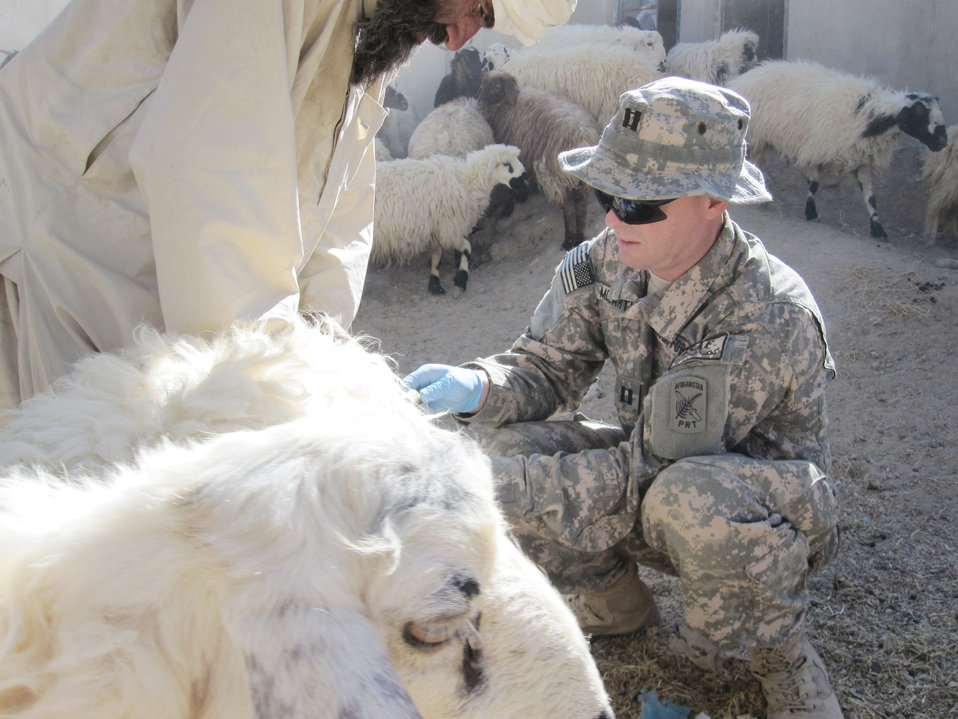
Servicemembers help Afghans

Sheep are immunized by Capt. Michael McCarter Feb. 28, 2010 in the Zabul province. Provincial Reconstruction Team Zabul members facilitate medical programs that brought clean drinking water to remote villages with high rates of intestinal disease, fed malnourished children, attacking a leading cause of death in children under the age of 6, and offered veterinary care to an agrarian society where more than 10,000 animals were cared for.